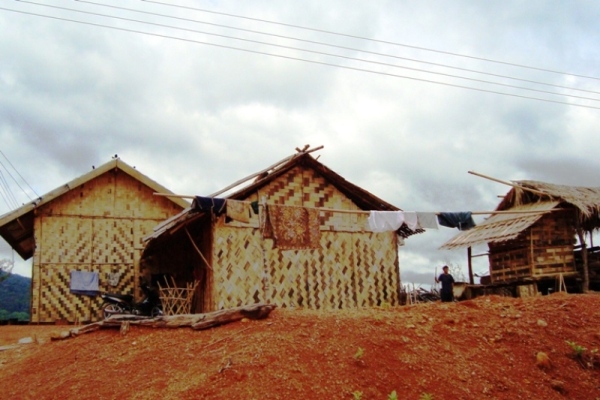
Assistant Secretary Schwartz Visits Laos

U.S. Assistant Secretary of State for Population, Refugees and Migration Eric Schwartz visits Laos in June 2010. Assistant Secretary for the Bureau of Population, Refugees, and Migration (PRM) Eric Schwartz visited Thailand and Laos in June to focus on the situation of Burmese ethnic minorities and Lao Hmong asylum seekers. Through PRM, the United States government provides financial assistance to the many organizations that are assisting these refugee populations in Thailand and Laos. Assistant Secretary Schwartz met with government officials and refugees themselves to see first-hand the challenges they face.